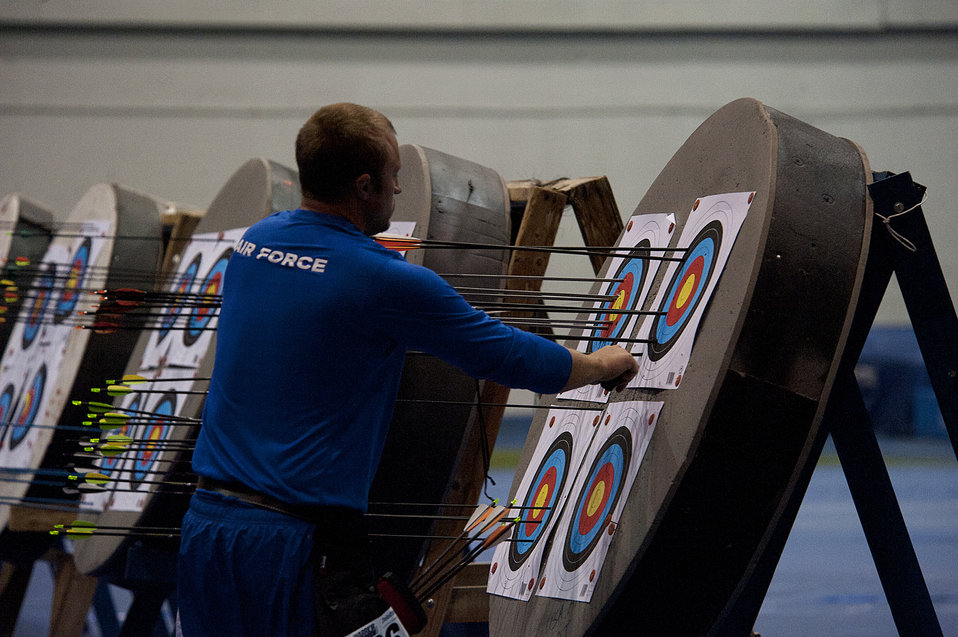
Warrior Games

Kendall Madden checks his target during the archery competition of Warrior Games 2012 at the U.S. Air Force Academy in Colorado Springs, Colo., May 2, 2012. Madden is with the Air Force team.